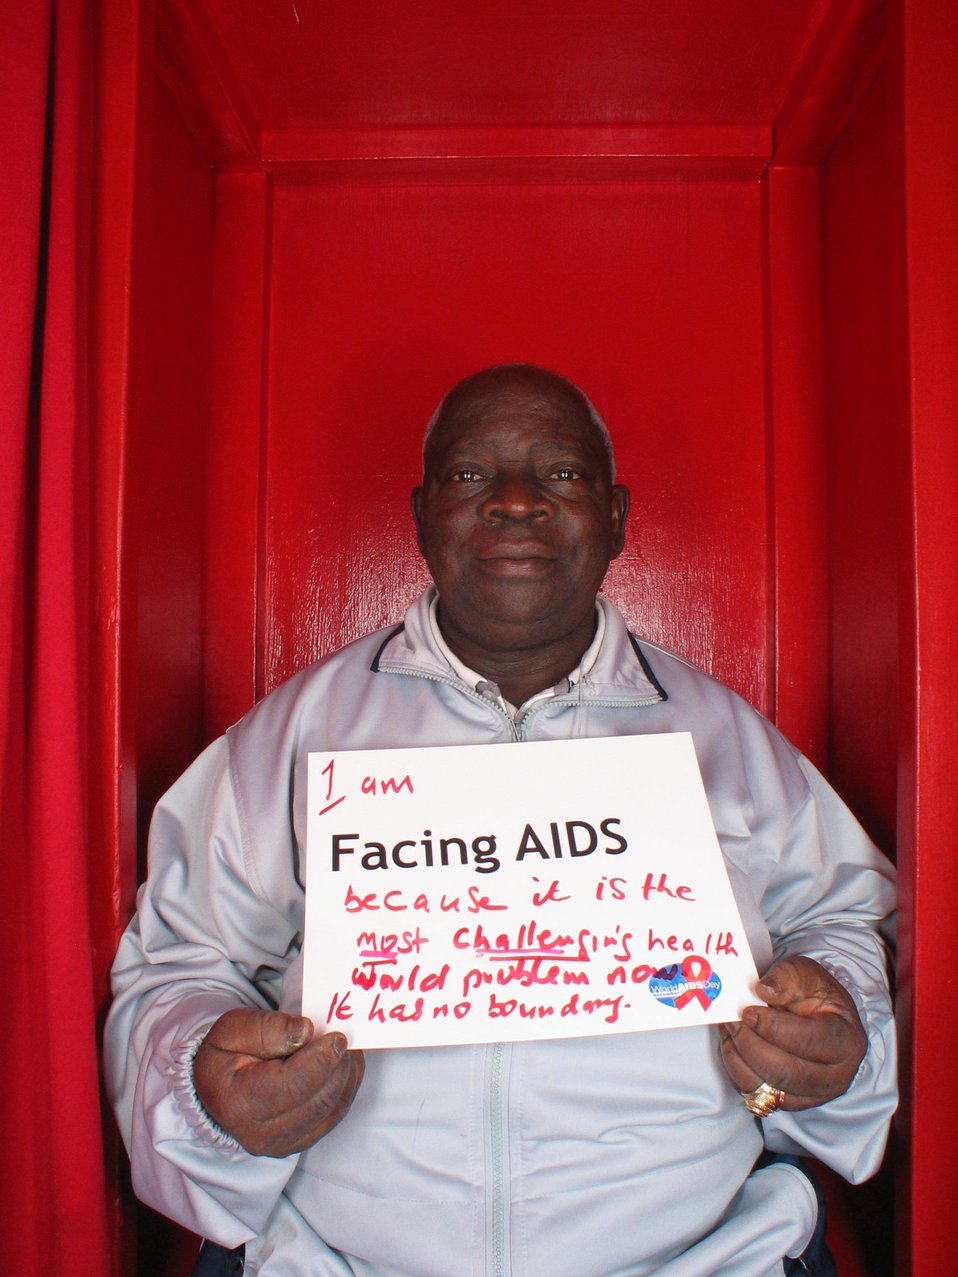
I am Facing AIDS because it is the most challenging health world problem now and has no boundary.